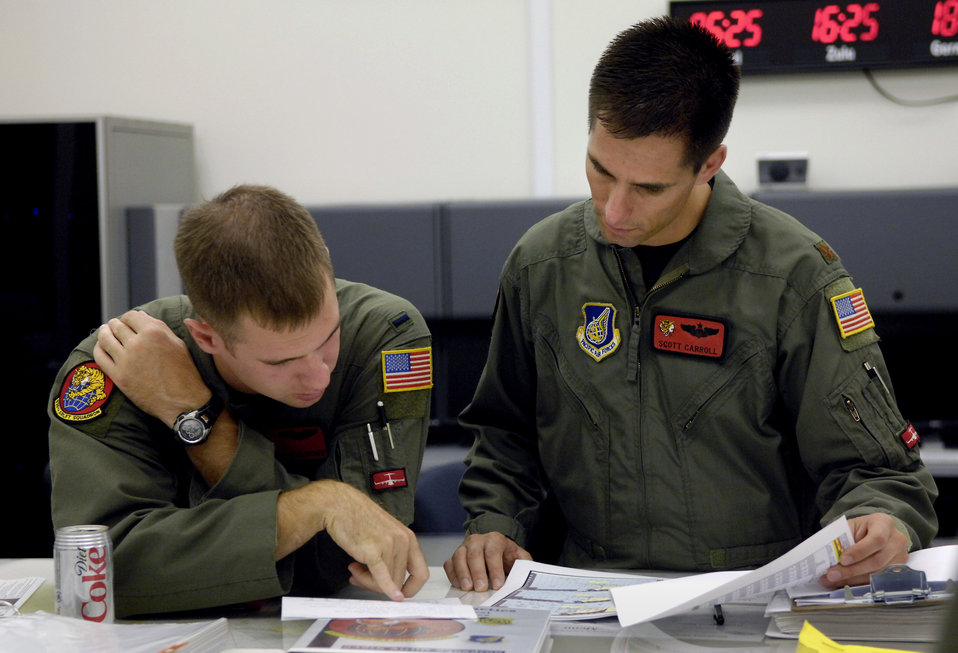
Hickam Airmen conduct 4-ship C-17 airdrop training

1st Lt. Jeff Hoelscher and Maj. Scott Carrol conduct an aircrew briefing prior to leaving for a four-ship airdrop training mission Aug. 13 at Hickam Air Force Base, Hawaii. The Airmen, pilots from the 535th Airlift Squadron, are conducting a four-ship, multi-element airdrop training mission to maintain currency and proficiency.